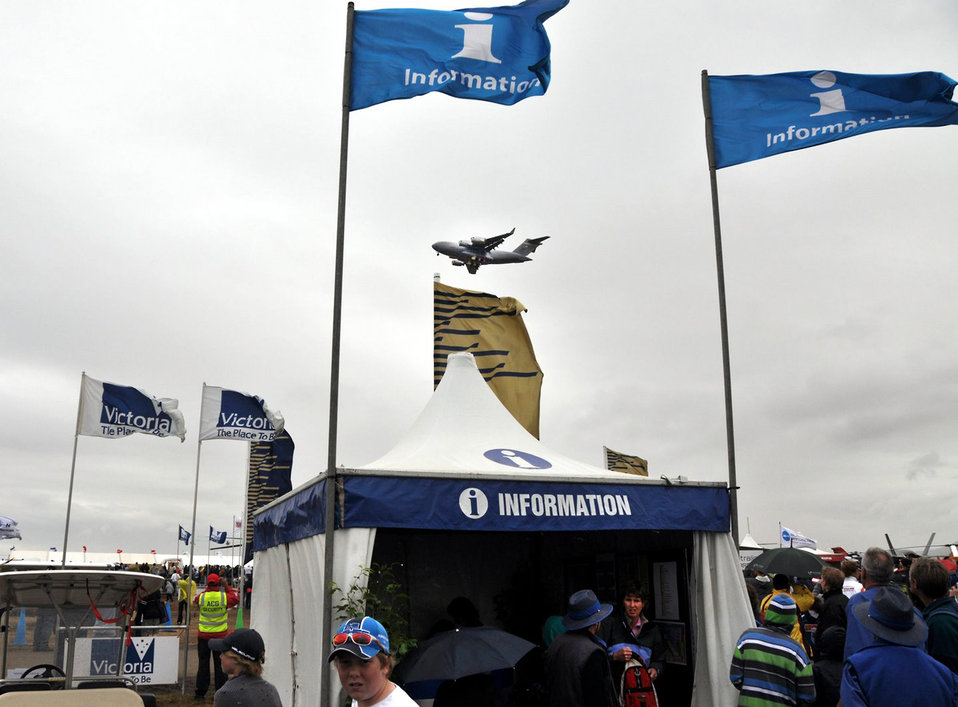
Airmen represent U.S. military at airshow 'down under'

Airshow spectators watch a C-17 Globemaster III peform during the 2009 Australian International Airshow March 15 at Avalon Airport, Australia. The C-17, from the 535th Airlift Squadron from Hickam Air Force Base, Hawaii, was one of 11 U.S. military aircraft participating in the airshow.